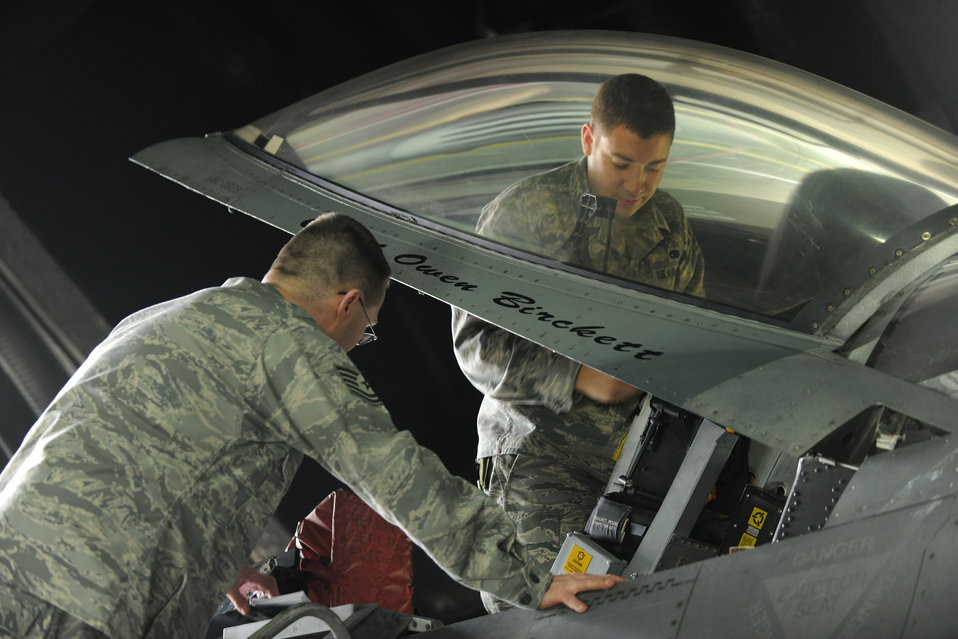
Operation Odyssey Dawn

SPANGDAHLEM AIR BASE, Germany ? Airmen assigned to the 52nd Maintenance Group install an ejection seat in an F-16 Fighting Falcon from the 480th Fighter Squadron at Spangdahlem Air Base in preparation for support of Operation Odyssey Dawn March 17. Joint Task Force Odyssey Dawn is the U.S. Africa Command task force established to provide operational and tactical command and control of U.S. military forces supporting the international response to the unrest in Libya and enforcement of United Nations Security Council Resolution (UNSCR) 1973. UNSCR 1973 authorizes all necessary measures to protect civilians in Libya under threat of attack by Qadhafi regime forces. JTF Odyssey Dawn is commanded by U.S. Navy Admiral Samuel J. Locklear, III.